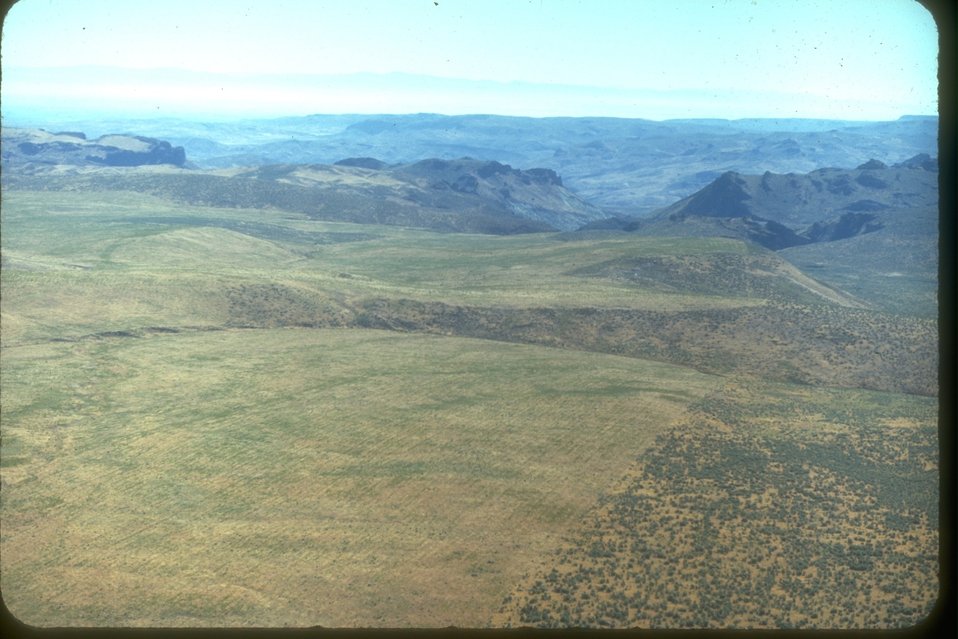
An arial view of the rangeland. Also, there is a sharp division from the land that is range seeded and where the sage brush starts.